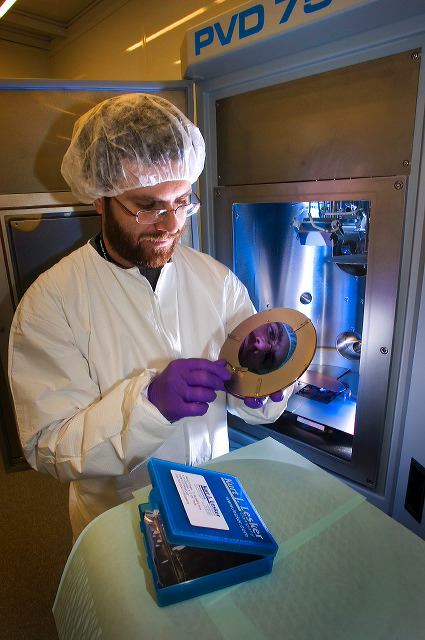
Nanotechnology research at the Center for Functional Nanomaterials at Brookhaven National Laboratory.
The overarching scientific theme of the CFN is the development and understanding of nanoscale materials that address the Nations' challenges in energy security, consistent with the DOE mission.